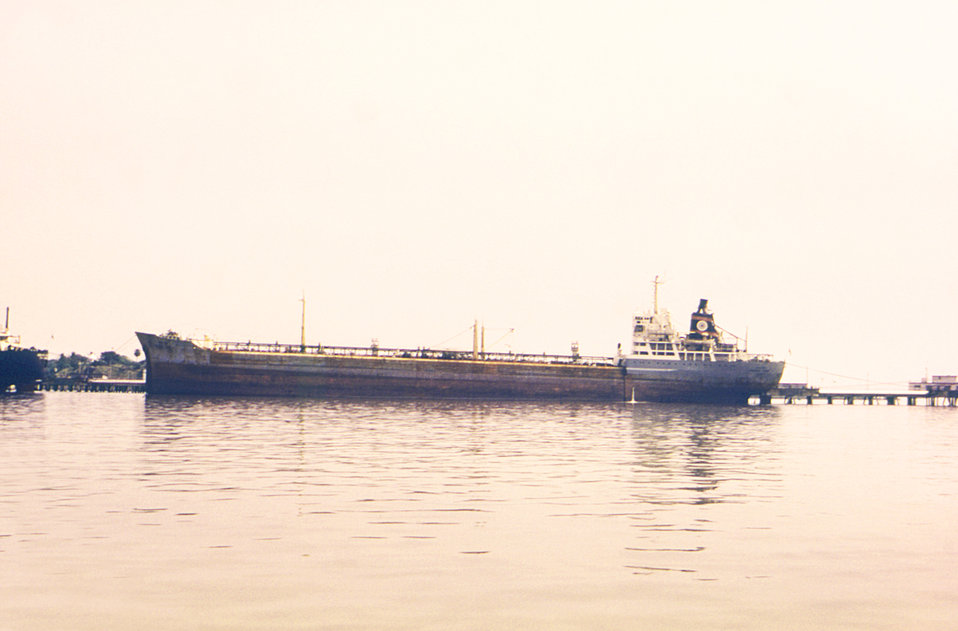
This image depicts an oil tanker using a mercantile waterway in Mumbai, India, also known as Bombay, to carry its cargo of oil.